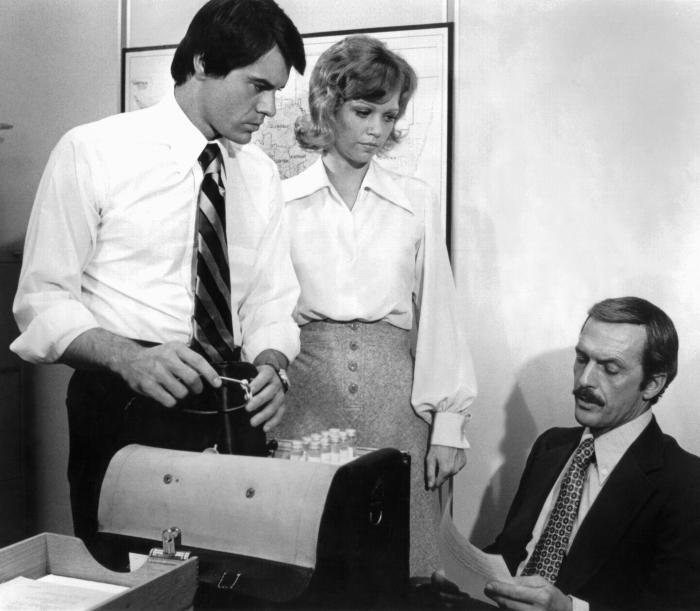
Here Robert Urich, Maureen Reagan, and Jack Hogan, pose for a 1974 publicity photo for the TV show Vector.